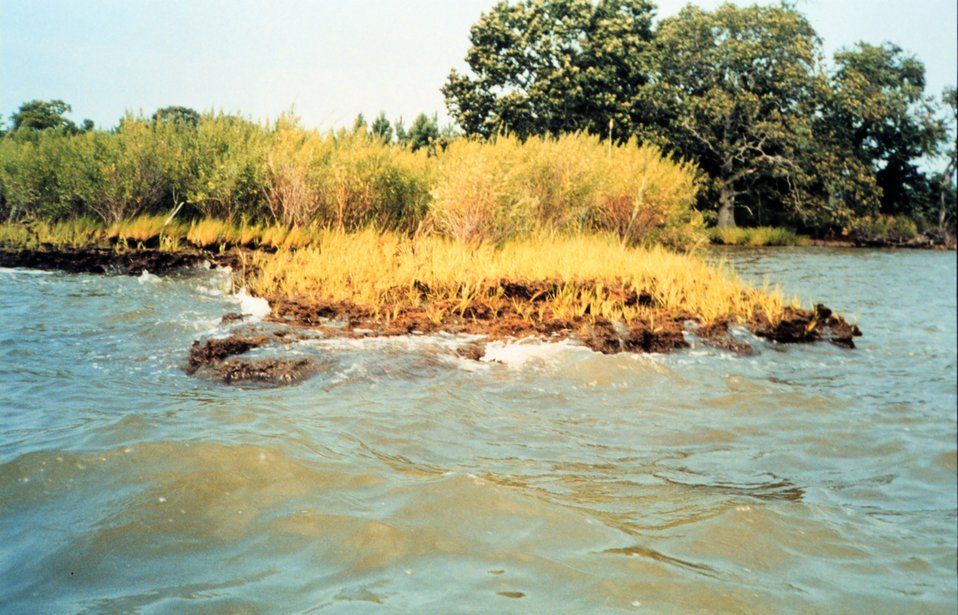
Like most areas in Chesapeake Bay, Wye Island suffers from the scourge of erosion as waves beat against the shoreline.